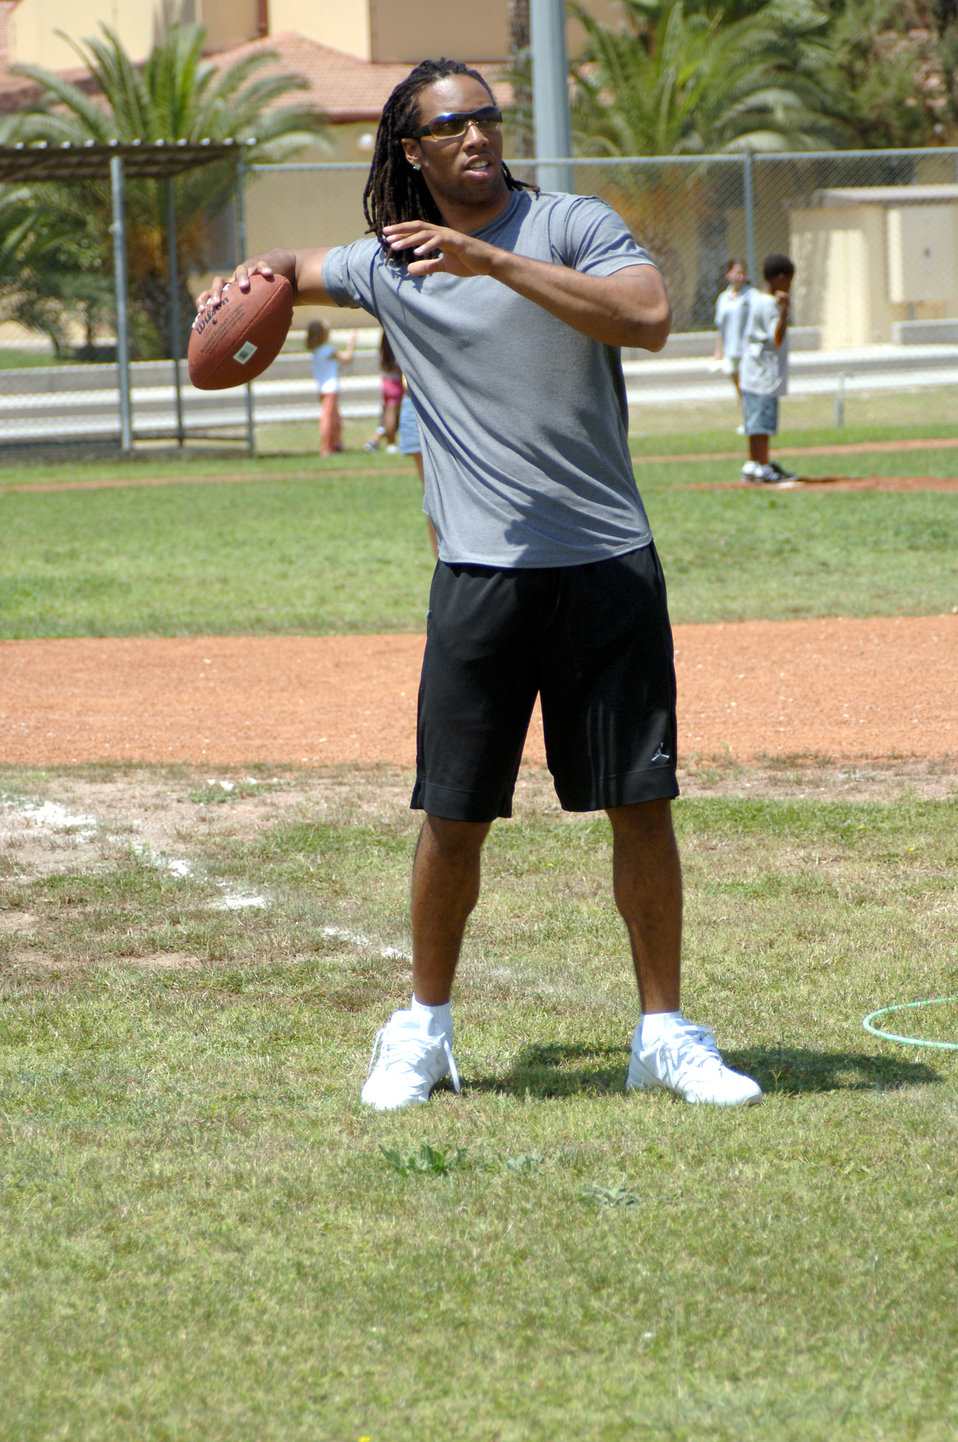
Arizona Cardinal visits Incirlik

Arizona Cardinals wide receiver Larry Fitzgerald gets ready to pass a football at Incirlik Air Base, Turkey, on Wednesday, June 21.